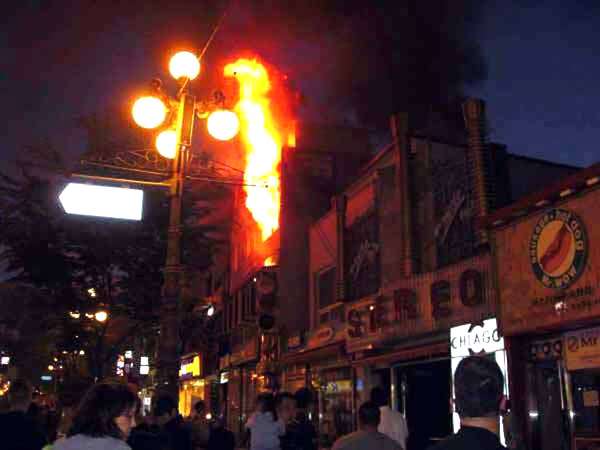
Osan Airmen save lives, property

A fire engulfs a restaurant May 30 outside of Osan Air Base, South Korea. Members of the 51st Security Forces Squadron town patrol section were among the first responders and helped evacuate patrons and provide crowd control until local authorities arrived.